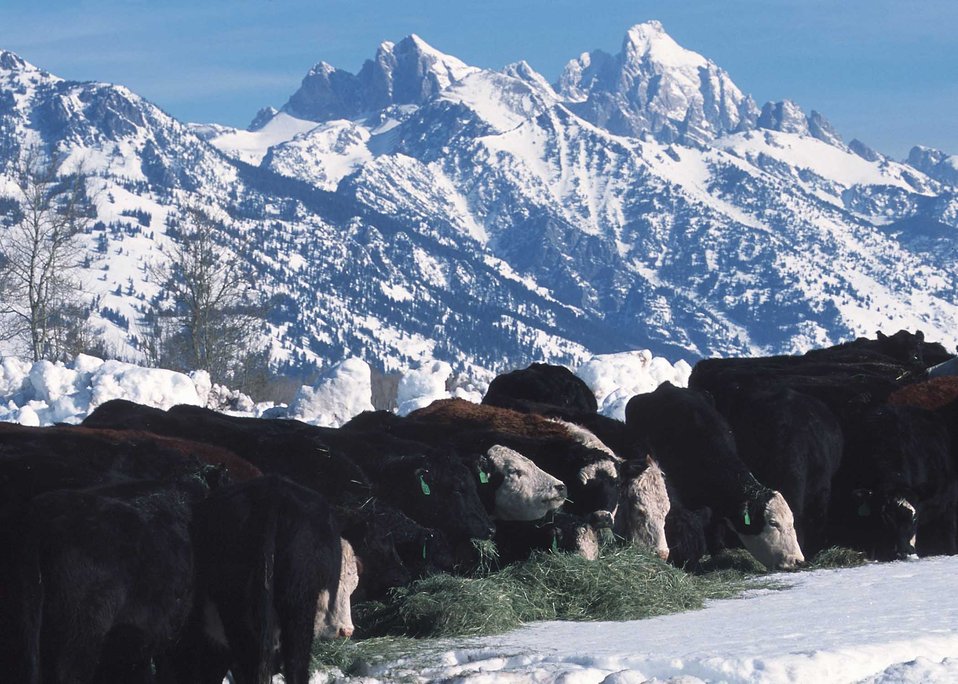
Feeding hay to cattle in deep snow conditions. Jackson, Wyoming.